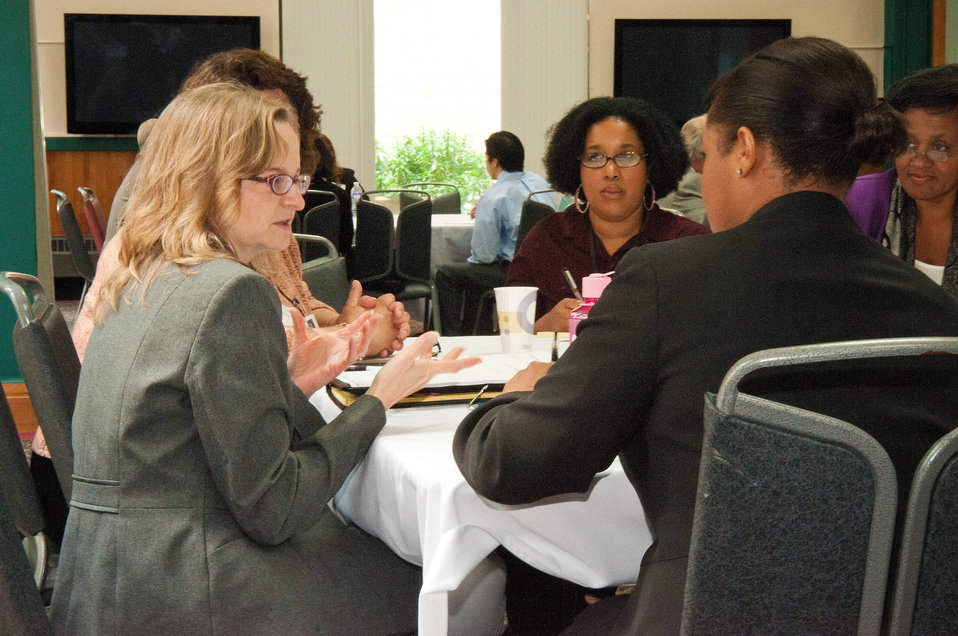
U.S. Department of Agriculture (USDA) Food Safety Inspection Service (FSIS) and mentor Terry Nintemann (left), FSIS discusses workplace “Atmosphere” at USDA’s Office of Human Resources Management (OHRM) Virtual University’s Fall Flash Mentoring Event at USDA in Washington, D.C. on Thursday, Sept. 6, 2012 in Washington, DC.